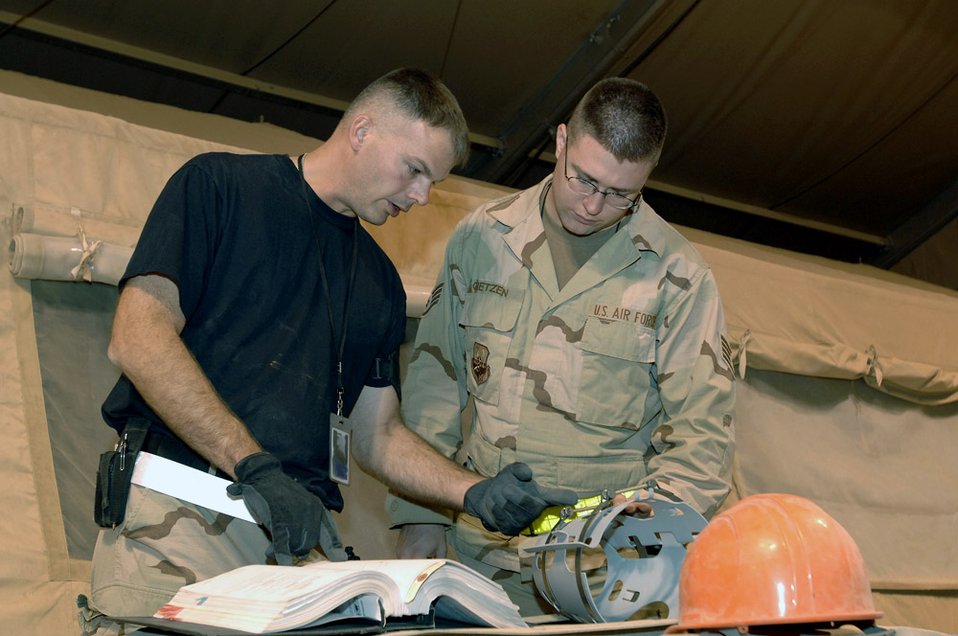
Operation Iraqi Freedom

Tech. Sgt. Michael Knight, deployed from Aviano Air Base, Italy, and Staff Sgt. Jesse Gietzen, deployed from Luke Air Force Base, Ariz., review technical orders before assembling a joint direct attack munition Oct. 9, 2005. Both Airmen are assigned to the 332nd Expeditionary Maintenance Squadron at Balad Air Base, Iraq.